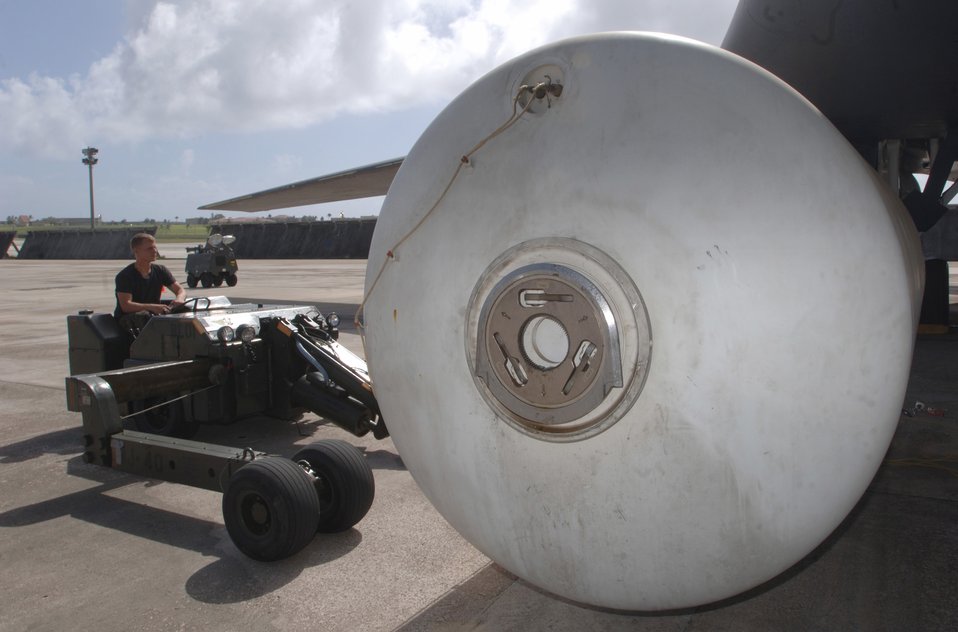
Lancer maintenance

ANDERSEN AIR FORCE BASE, Guam (AFPN) -- Senior Airman James Underhill operates a